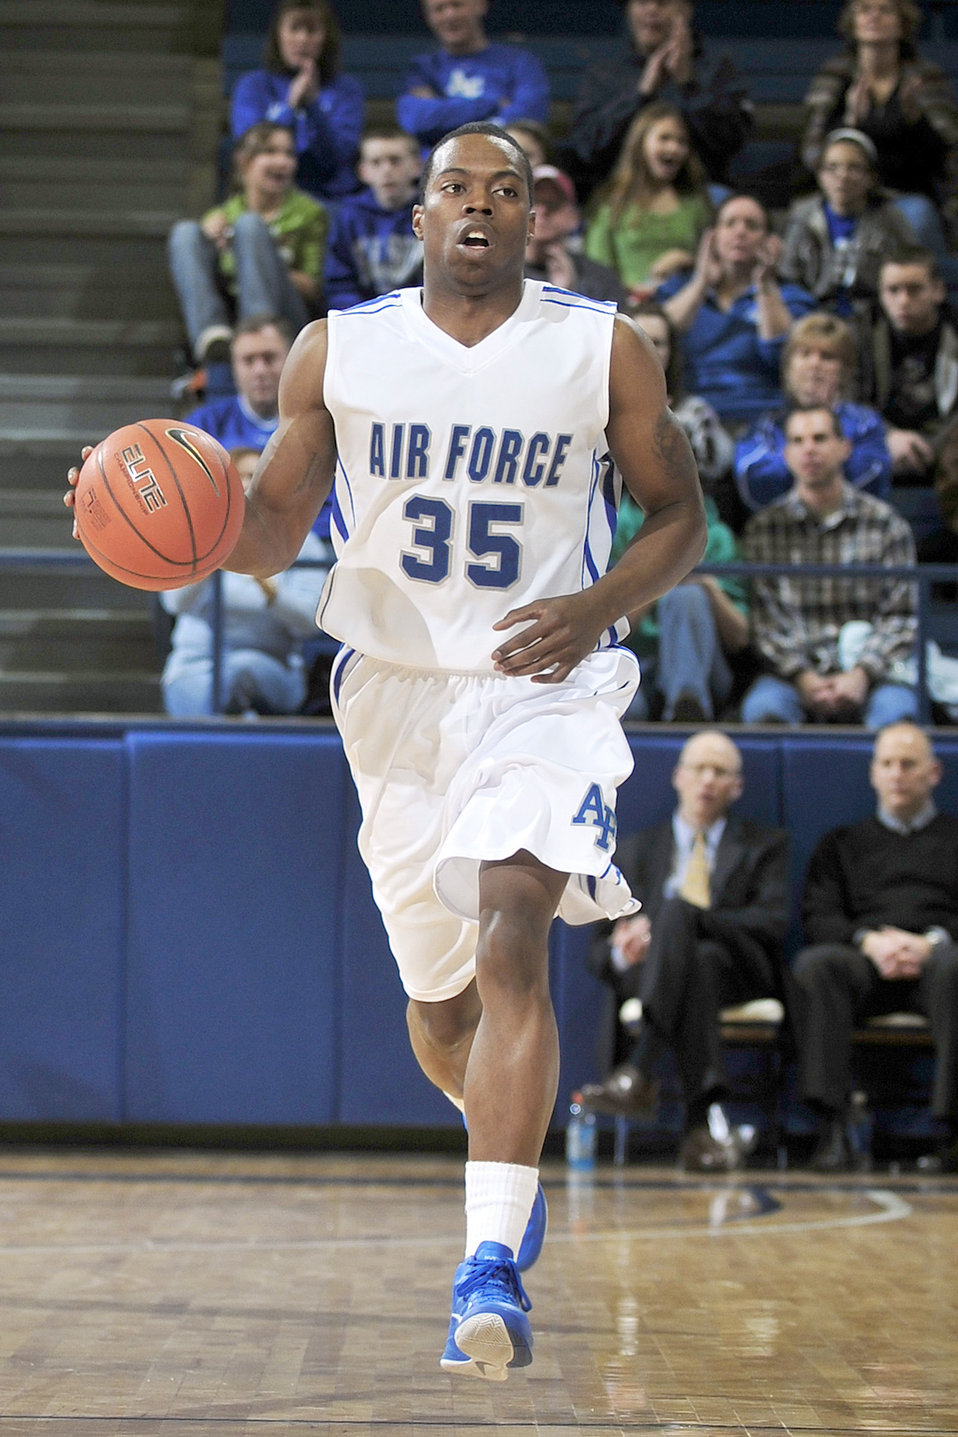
Falcons win home opener

Air Force Academy junior Evan Washington pushes the ball up court during the Falcons Mountain West Conference home opener Jan. 5, 2011, against Utah. Washington dished out a career high 11 assists as the Falcons upset the Utes 77-69 at the Academy's Clune Arena in Colorado Springs, Colo.